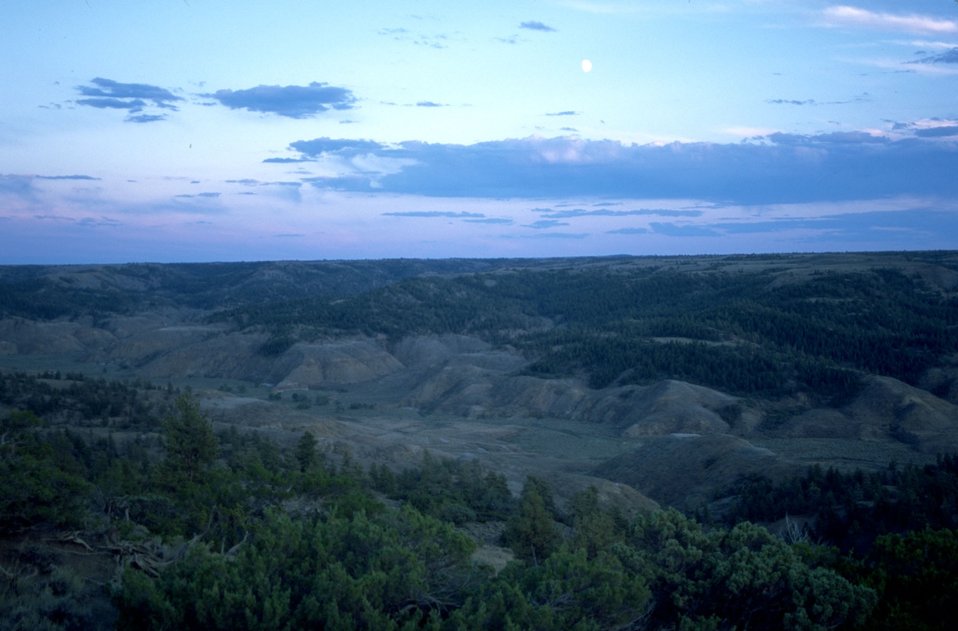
Clouds, sky over the Missouri Breaks